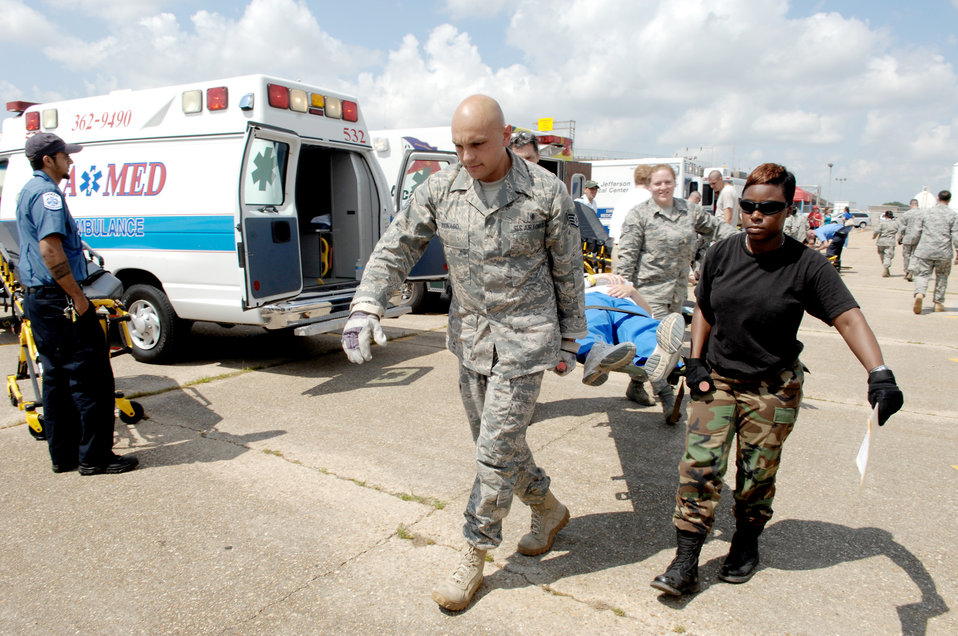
State, federal teams prepare for hurricane season

Members of the disaster aeromedical staging facility carry a simulated patient into the facility during an evacuation exercise May 20, 2010, at the New Orleans Lakefront Airport, La. The exercise was controlled by officials from the Louisiana Department of Health and Hospitals with the help of multiple military counterparts including Air Mobility Command and U.S. Transportation Command members from Scott Air Force Base, Ill.